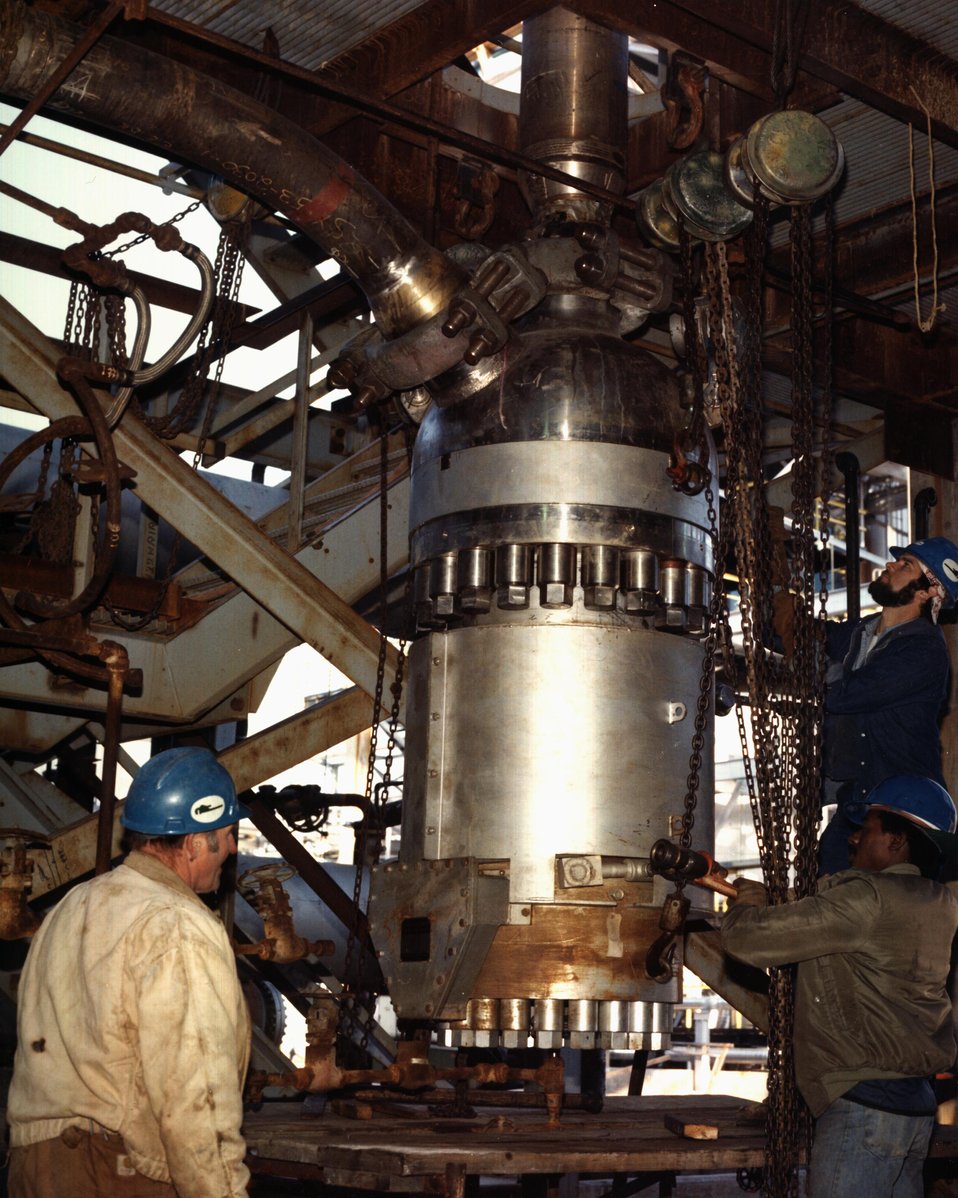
VIEW OF THE EBULLATING PUMP AT THE PARTIALLY CONSTRUCTED H-COAL 600-TONS-PER-DAY PILOT PLANT.